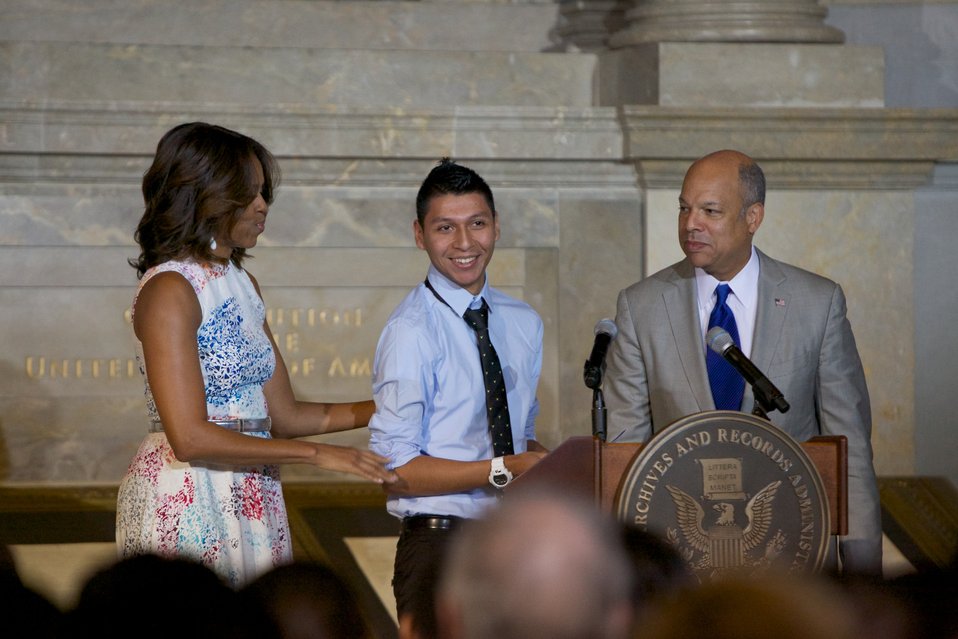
Naturalization Ceremony with Michelle Obama